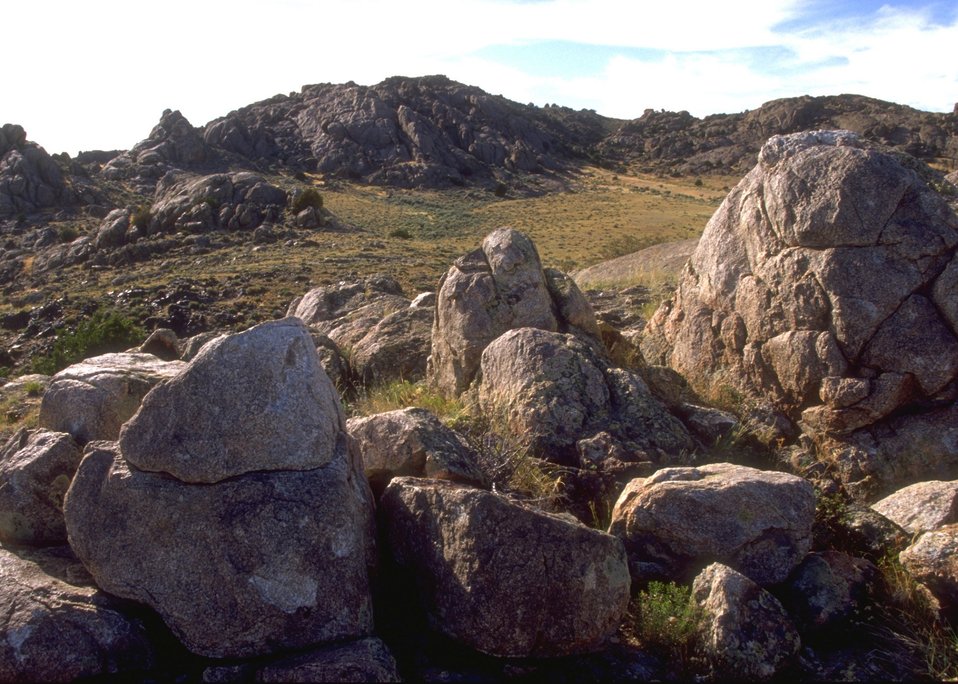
Landscape along the Alcova/Seminoe Back Country Byway, Rawlins Field Office.